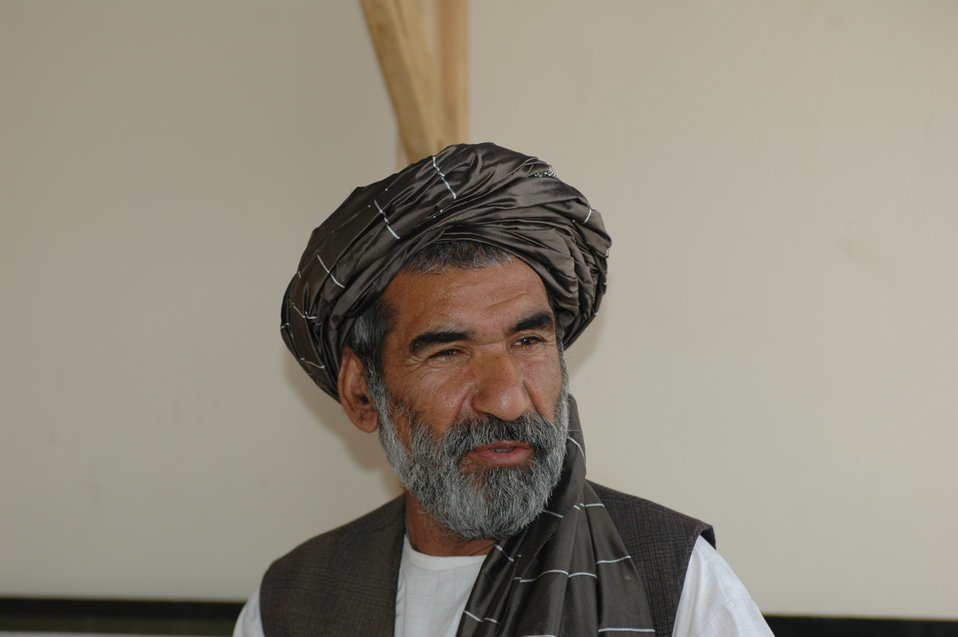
CODEL Berman